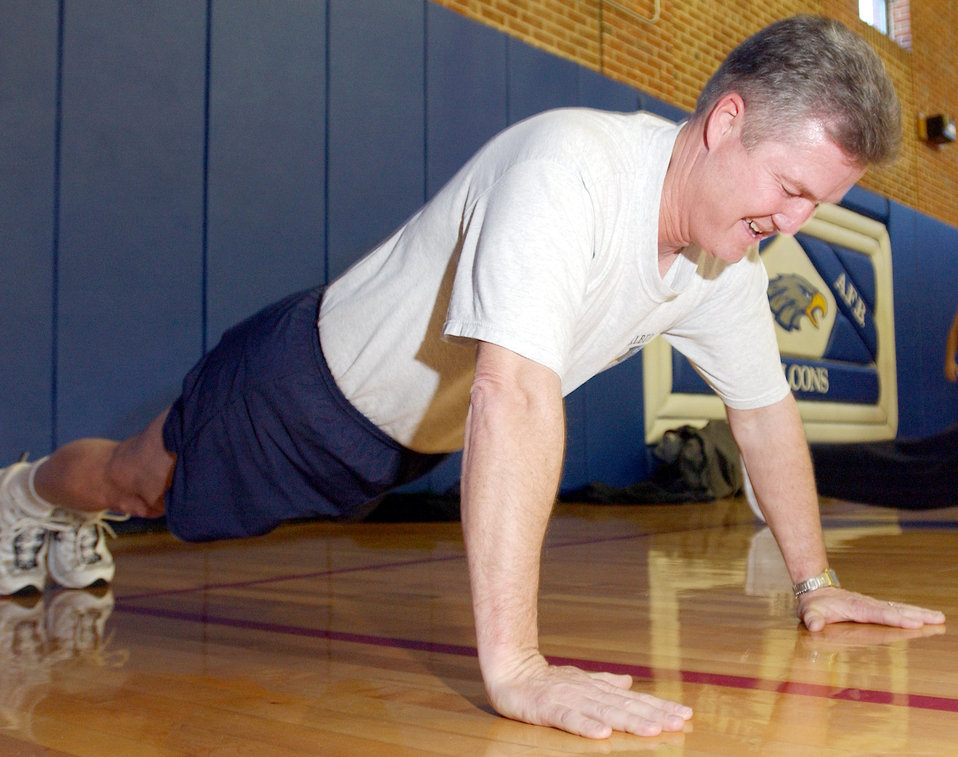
Chief fitness

BOLLING AIR FORCE BASE, D.C. (AFPN) -- Chief Master Sgt. of the Air Force Gerald R. Murray performs the push-up portion of his fitness evaluation. Chief Murray helped Air Force Chief of Staff Gen. John P. Jumper officially launch the new Air Force fitness standard Jan 7.